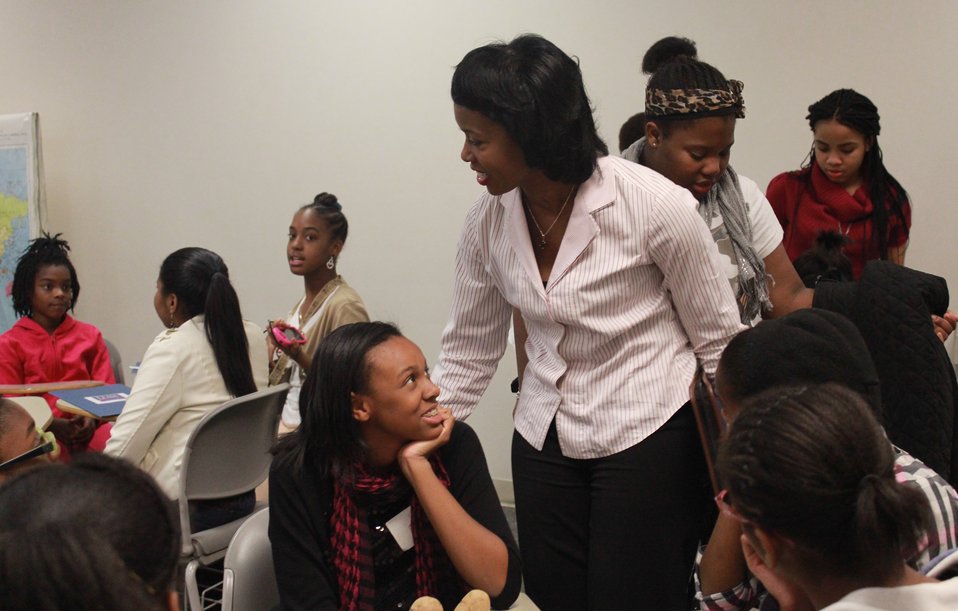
Spelman Girls Institute Nov 2012

A mechanical engineer by trade, Dot Harris spoke with the 12-14 yr old girls in the audience from a personal perspective.